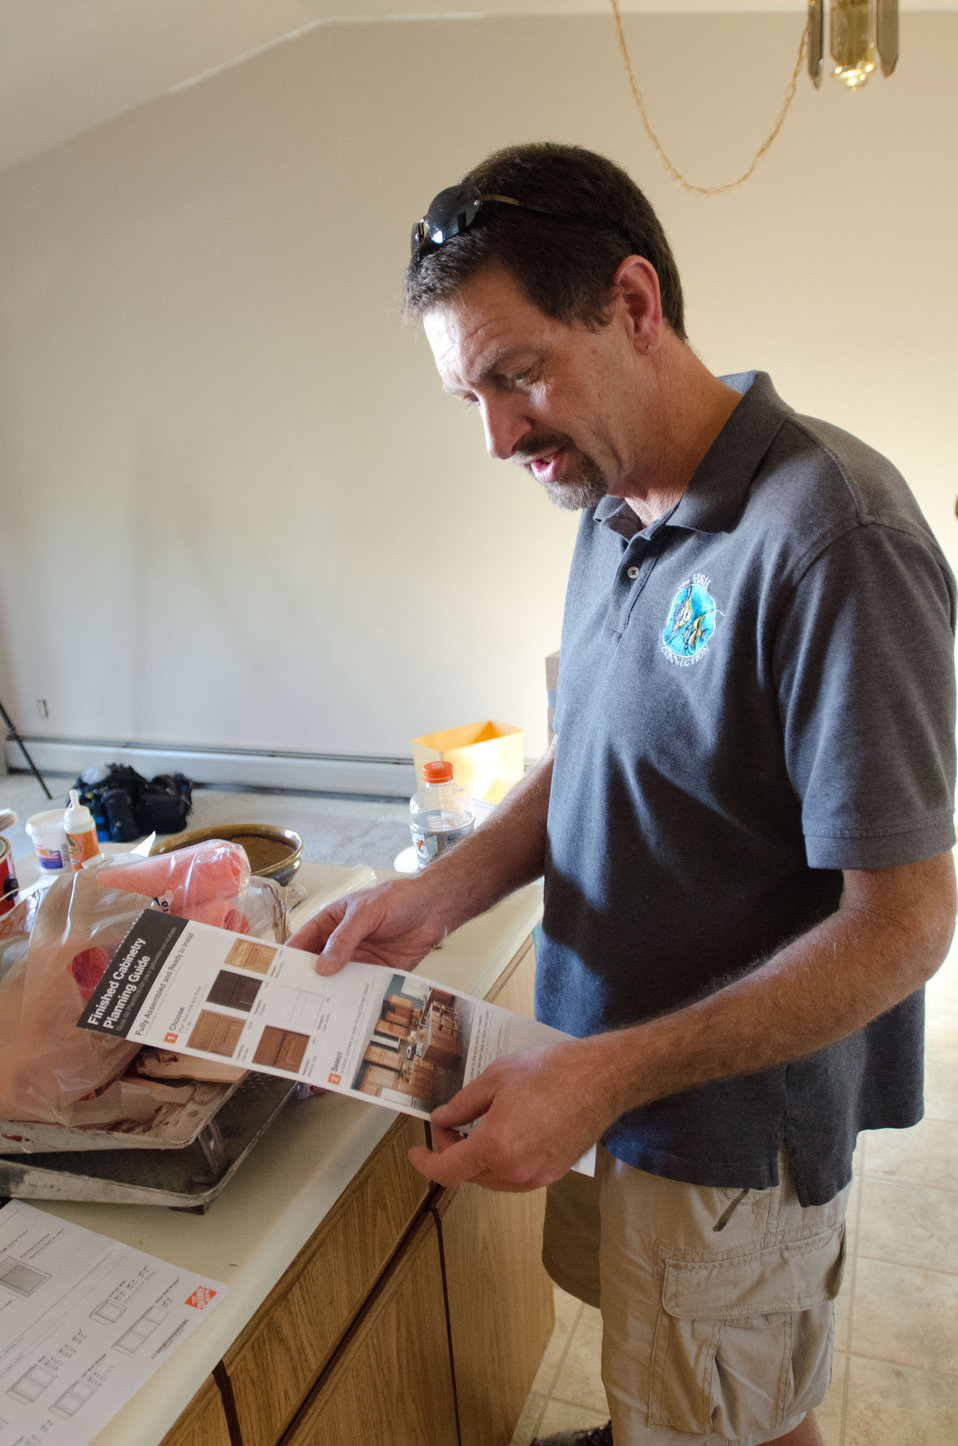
Colorado native and business owner Bruce Longwell looks over a home improvement brochure, as he makes current and long term plans for his Durango, CO home on July 17, 2012. Mr. Longwell financed the single-family house with a U.S. Department of Agriculture (USDA) Rural Development (RD) Housing Assistance loan. This provided lower monthly payments than his prior rental home. Homeownership provides potential gains through home equity.